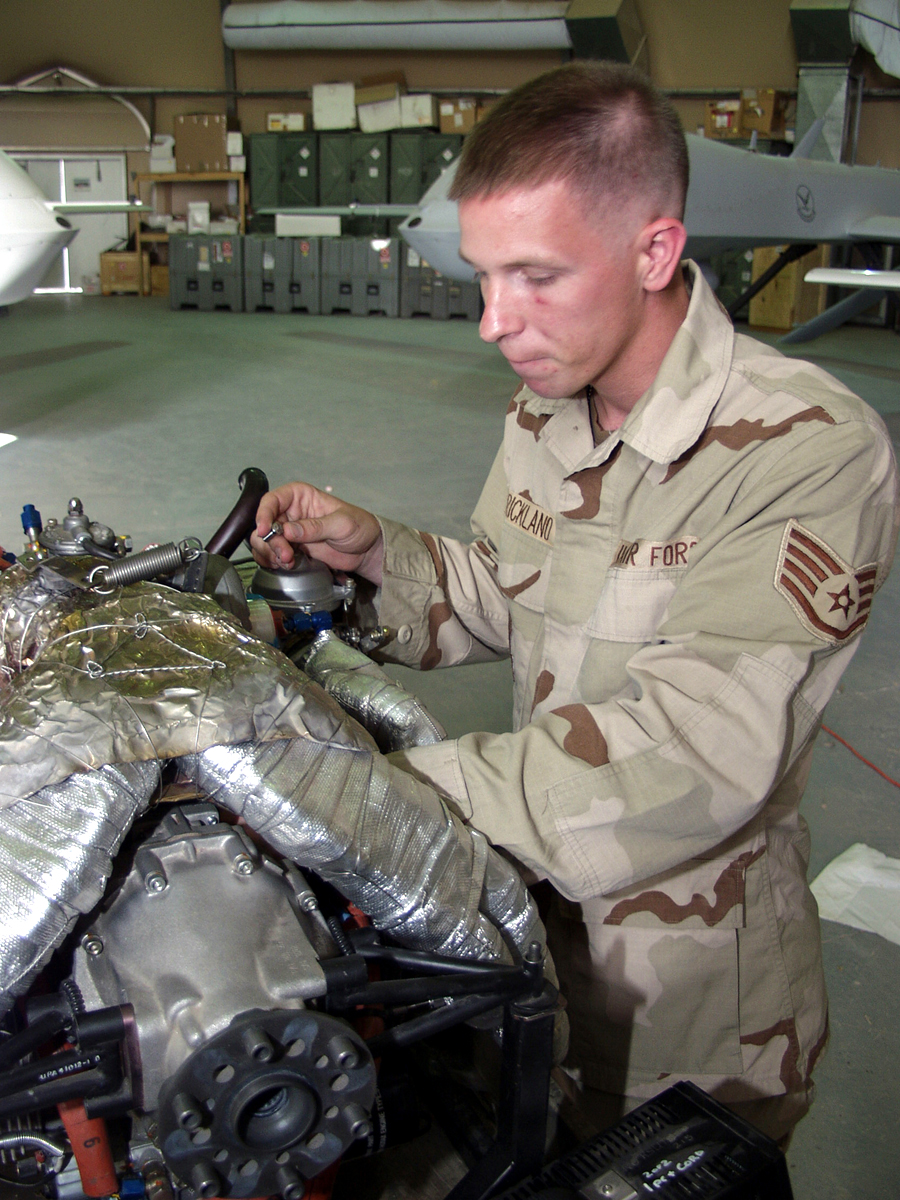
Engine work

OPERATION IRAQI FREEDOM -- Staff Sgt. Kevin Strickland, 46th Expeditionary Reconnaissance Squadron maintenance crew chief, works on a Rotax 914 engine from an RQ-1 Predator unmanned aerial vehicle at a deployed location participating in Operation Iraqi Freedom. His task was part of a time-phased engine overhaul procedure.